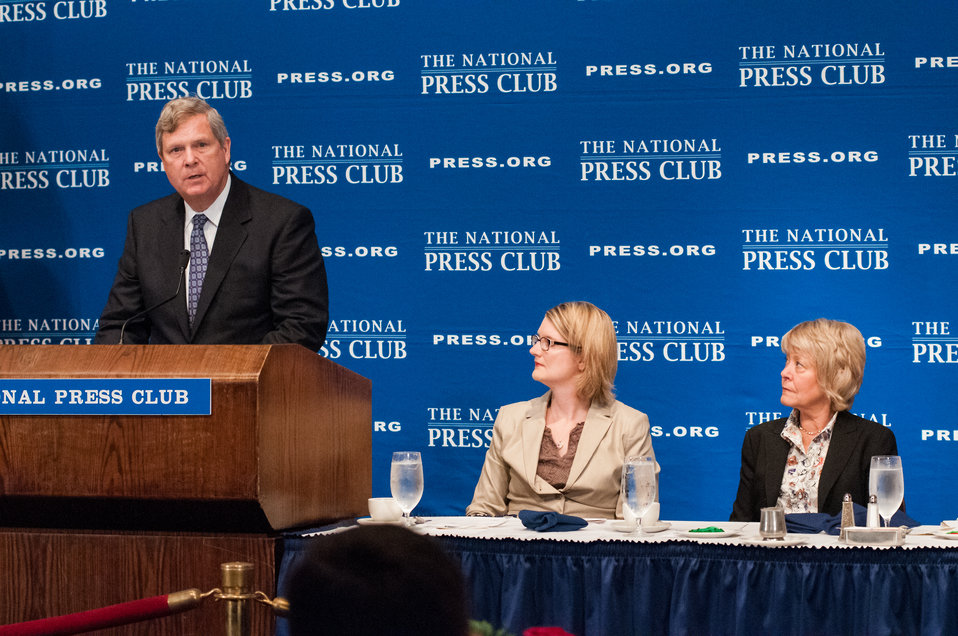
Agriculture Secretary Tom Vilsack discusses the vision for the U.S. Department of Agriculture’s (USDA) future efforts to assist America to adapt to modern environmental challenges at the National Press Club in Washington, D.C. on Wednesday Jun. 5, 2013. (L to R Agriculture Secretary Tom Vilsack, Bloomberg News and National Press Club President Angela Greiling Keane, U. S. Agency for International Development Senior Advisor for International Education Secretary Vilsack’s wife Mrs. Christie Vilsack).